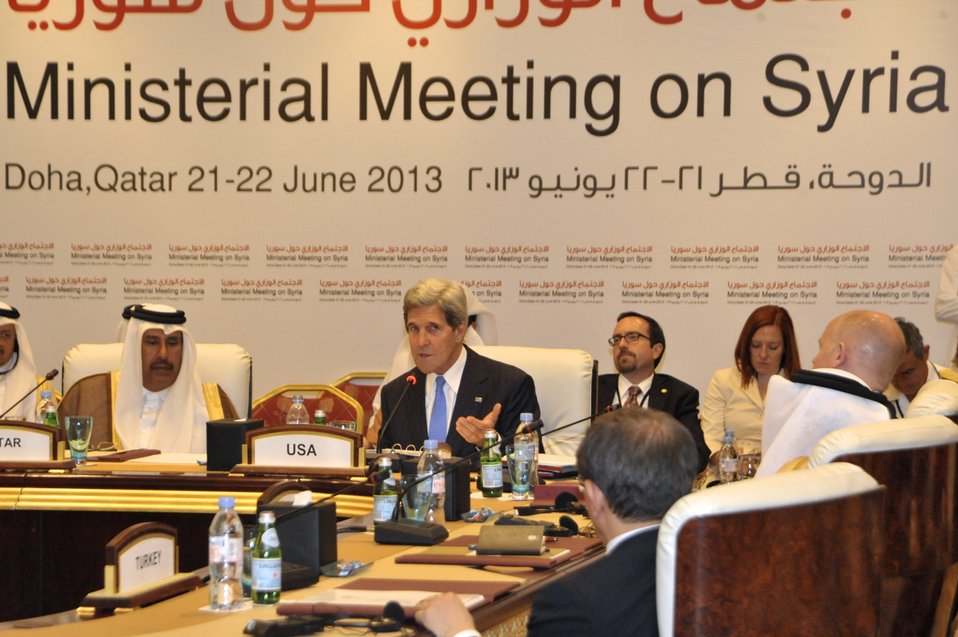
Secretary Kerry Delivers Remarks at the London Eleven Meeting

U.S. Secretary of State John Kerry delivers remarks at the London Eleven meeting as the member nations meet to discuss Syria in Doha, Qatar, on June 22, 2013.